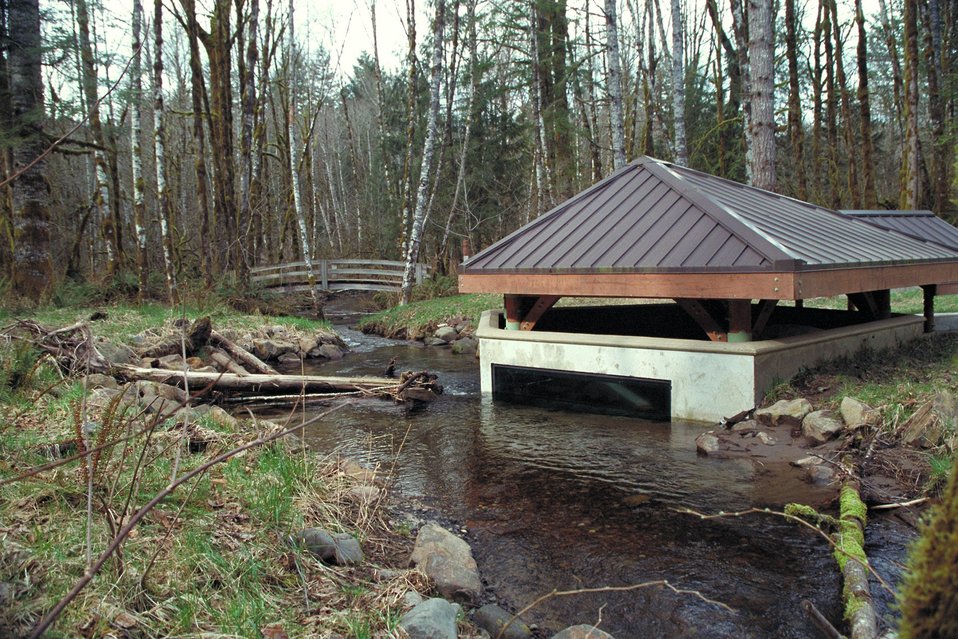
Cascade Stream Watch is an environmental education program conducted at BLM's Wildwood Recreation site.